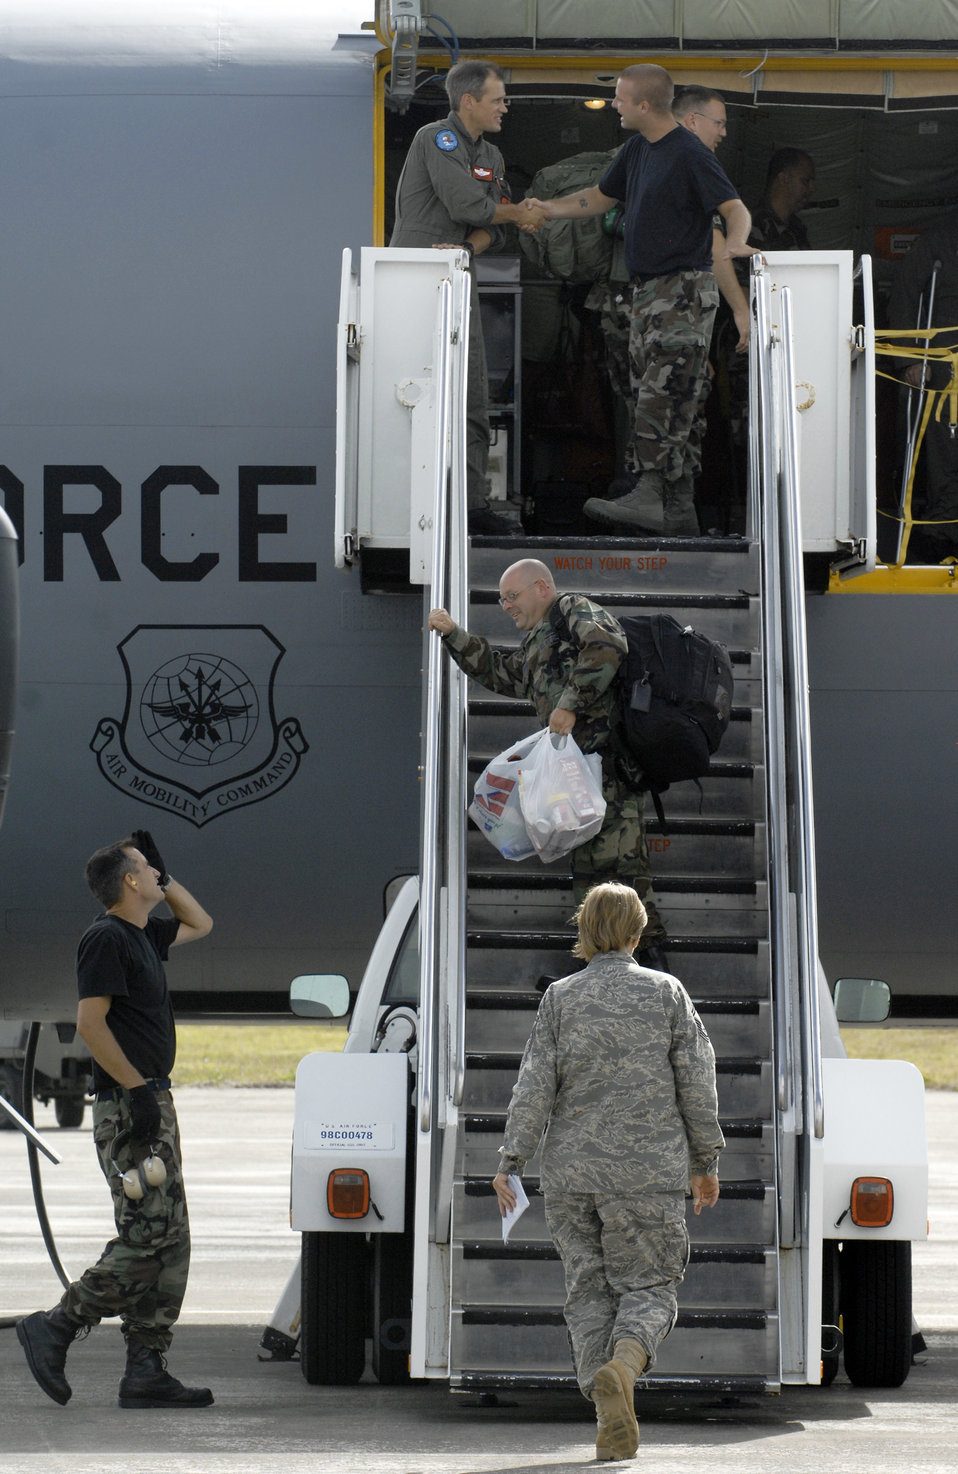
Reserve Airmen complete deployment to Guam

Members from the 434th Air Refueling Wing from Grissom Air Reserve Base, Ind., board a KC-135 Stratotanker April 29 at Andersen Air Force Base, Guam. Members of the 434th ARWing completed a deployment in support of Pacific refueling operations.